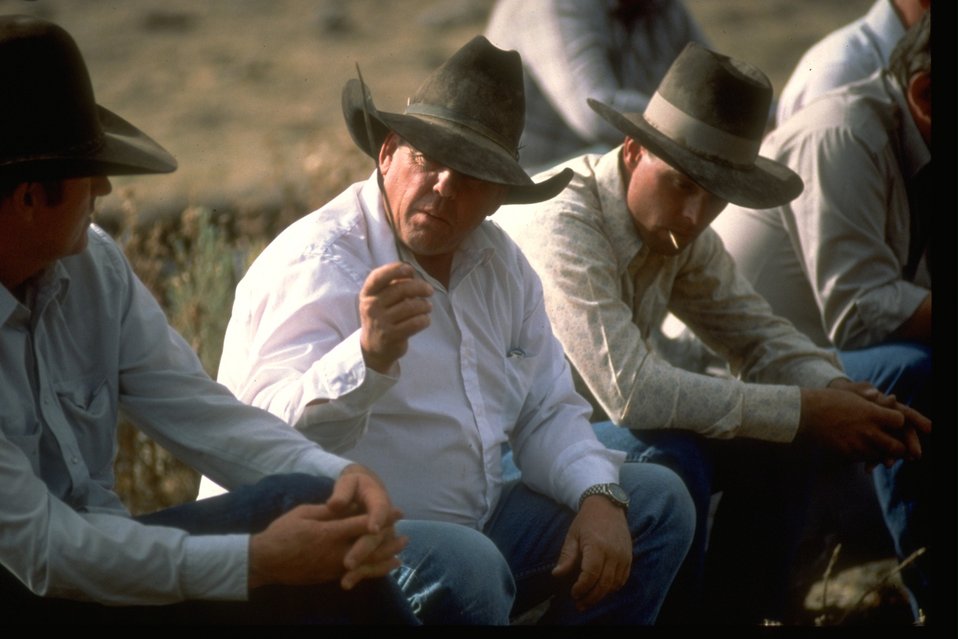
Rancher contingent Trout Creek Mountains working group.